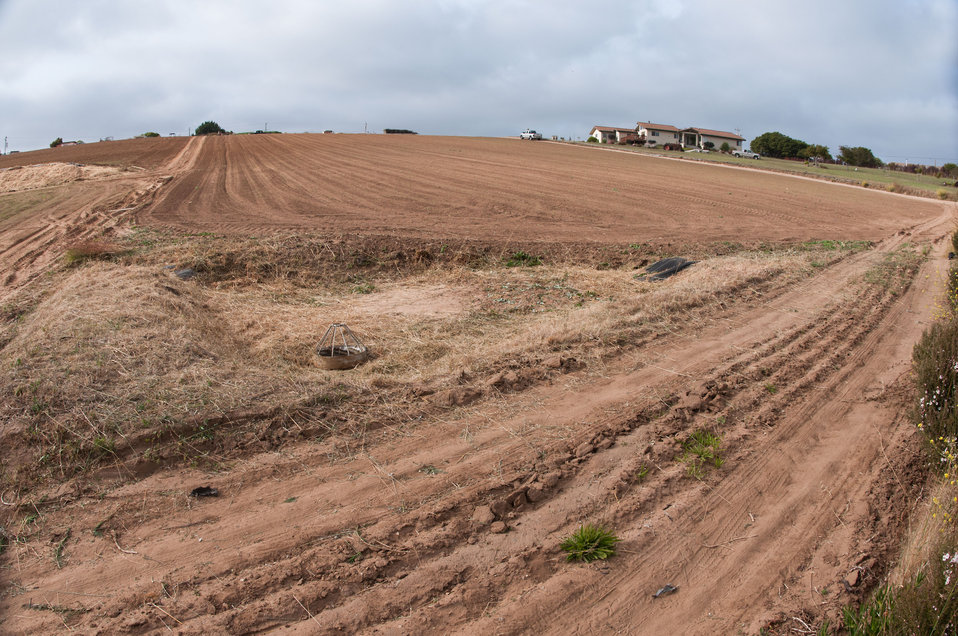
A sediment pond and drainpipe at the low end of a strawberry farm field near Castroville, CA, on Thursday, June 16, 2011. When seasonal rains produce runoff, the silt that flows with it is caught in sediment basins. The basins have fast growing plants to hold the structure and a raised drainpipe that allows the water to pool and silt to settle. The farm is within sight of the Monterey Bay National Marine Sanctuary, it is important that silt does not reach the ocean waters. The grass has been trimmed down to show the contour and design of the basin during this dry time of the year. The roots are alive and the plants will grow back.